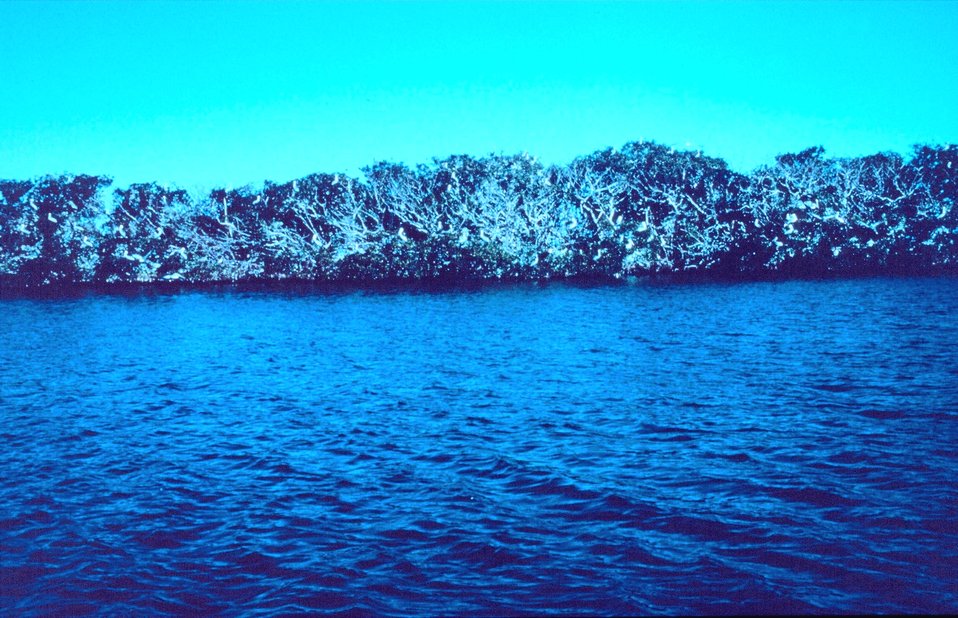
A mangrove shoreline